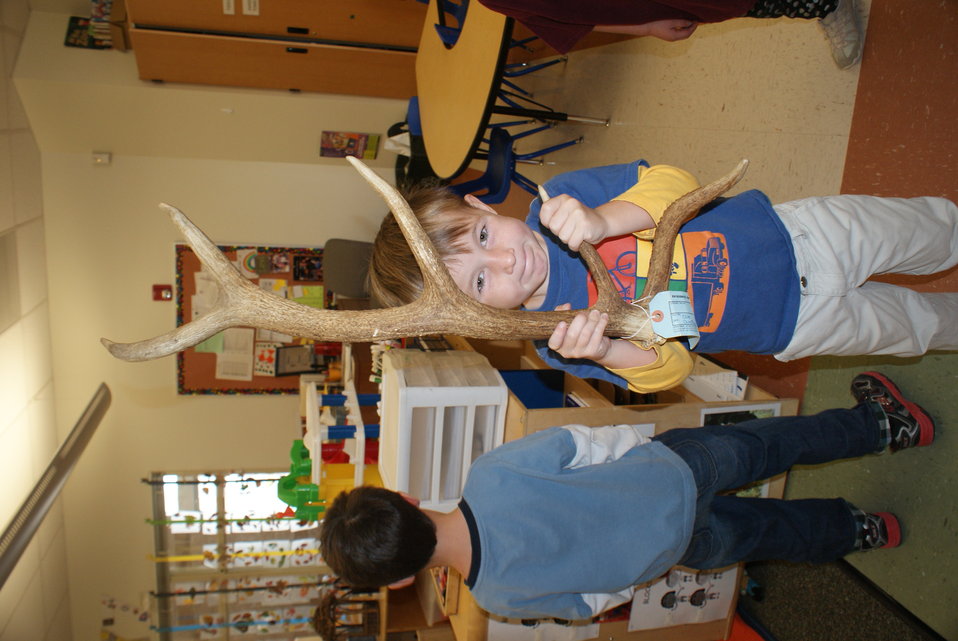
Scientists in the Community Program

U.S. Fish and Wildlife Service Mountain-Prairie Region Deputy ARD for External Affairs, Matt Kales, introduces early childhood education students at William Roberts Elementary School in Denver to some of Colorado's native and historic wildlife species.